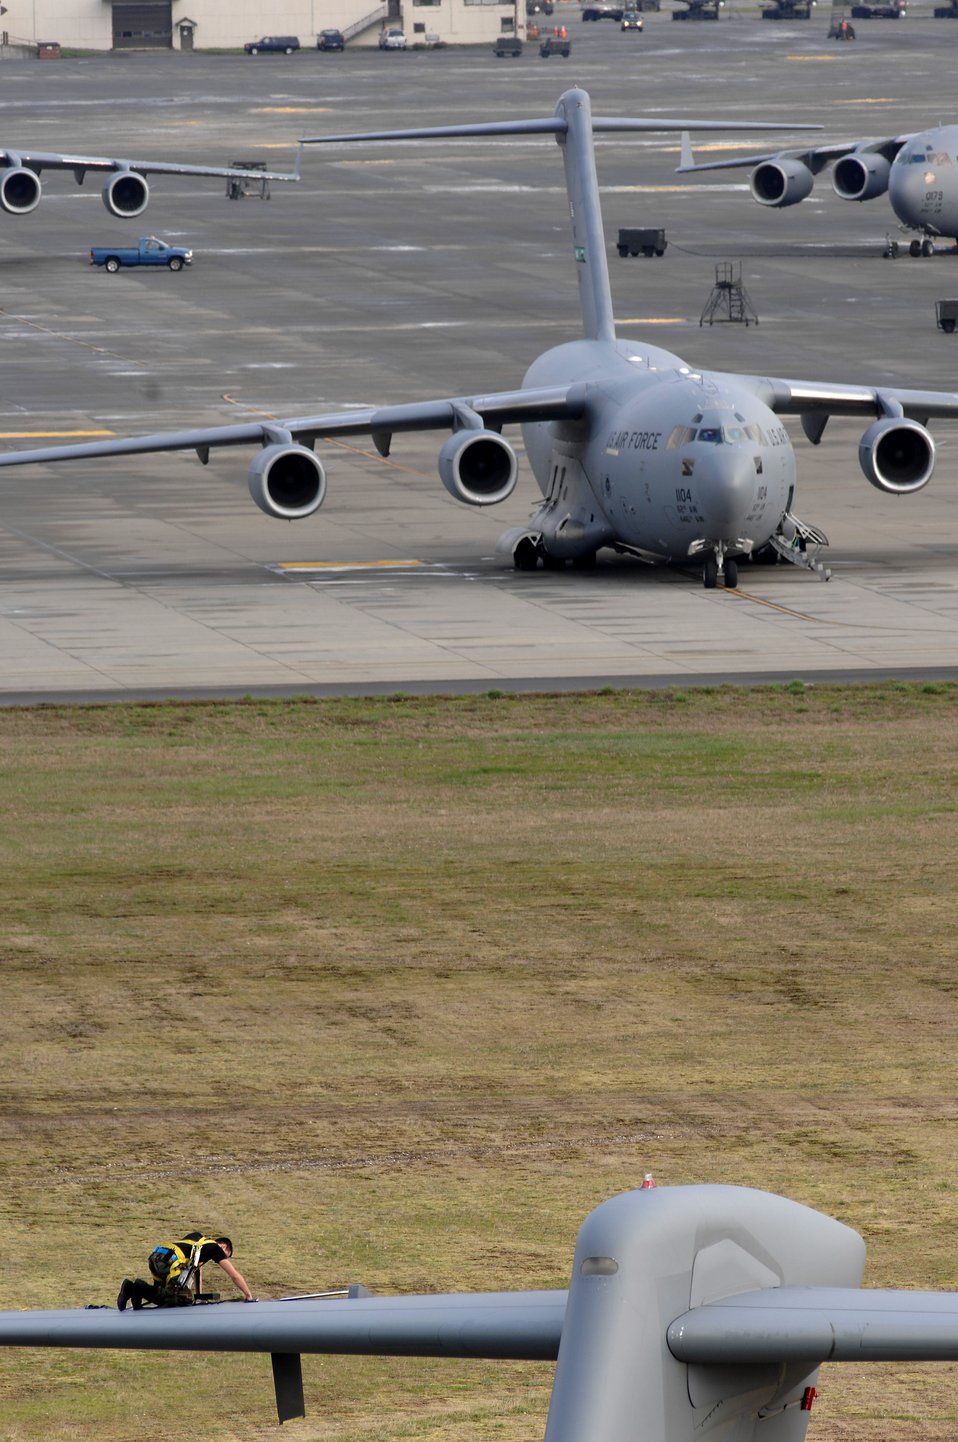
Maintainers keep C-17s flying

Airman 1st Class Bryan Walters kneels on the tail of a C-17 Globemaster III March 28 at McChord Air Force Base, Wash., and prepares to replace an integrated flight control module on the aircraft. Airman Walters is assigned to the 62nd Aircraft Maintenance Squadron.